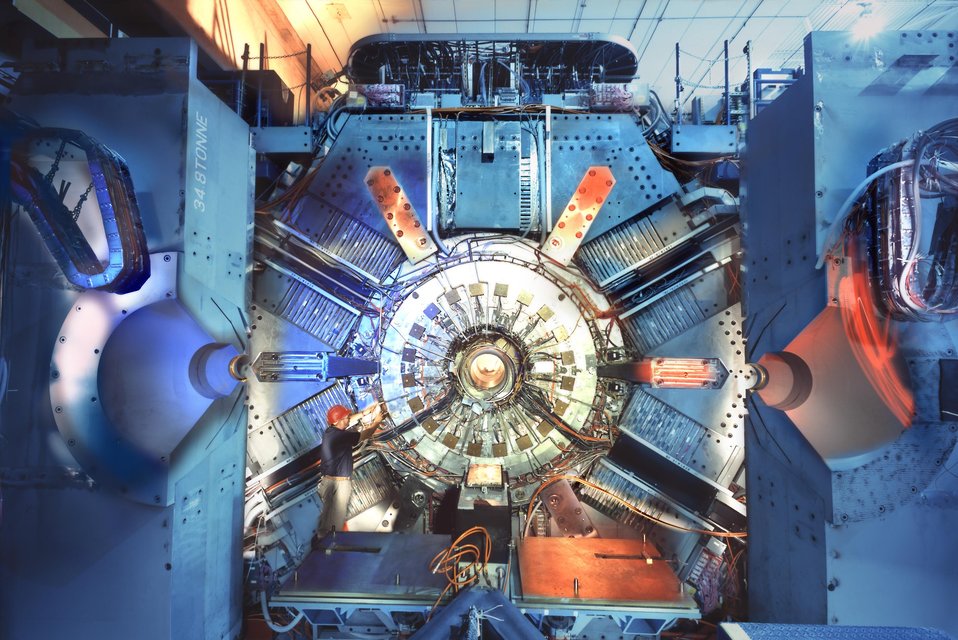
THE BABAR DETECTOR AT THE STANFORD LINEAR ACCELERATOR FACILITY.

ELECTRON AND POSITRON COLLISIONS AND THEIR DECAY PRODUCTS INTERACT WITH THE LAYERED SUBSYSTEMS OF THE BABAR DETECTOR TO PROVIDE INFORMATION THAT COULD HELP PHYSICISTS LEARN ABOUT THE EARLIEST MOMENTS OF OUR UNIVERSE AND THE FUNDAMENTAL INTERACTIONS OF MATTER. THE BABAR DETECTOR, PART OF SLAC'S B FACTORY SYSTEM, WILL PRODUCE B AND ANTI-B MESONS, PARTICLE-ANTIPARTICLE PAIRS SO THAT SCIENTISTS CAN INVESTIGATE THE MATTER-ANTIMATTER ASYMMETRY IN NATURE.